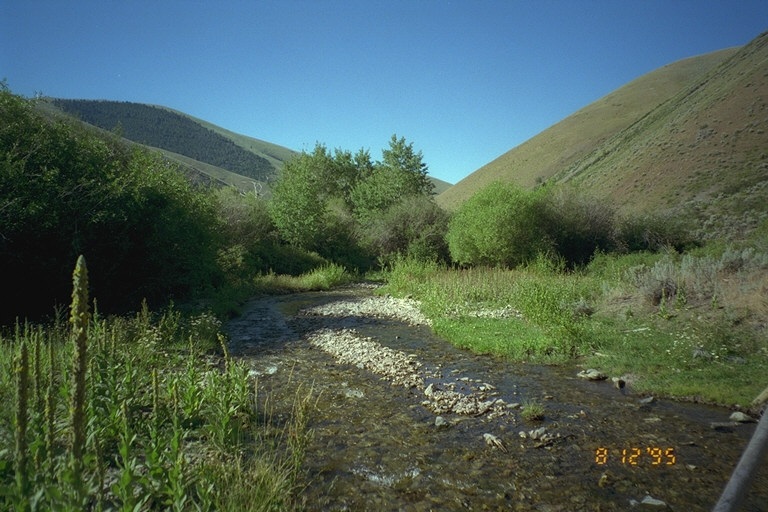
Riparian area Public Lands Salmon Field Office UCSC Upper Columbia Salmon Clearwater District